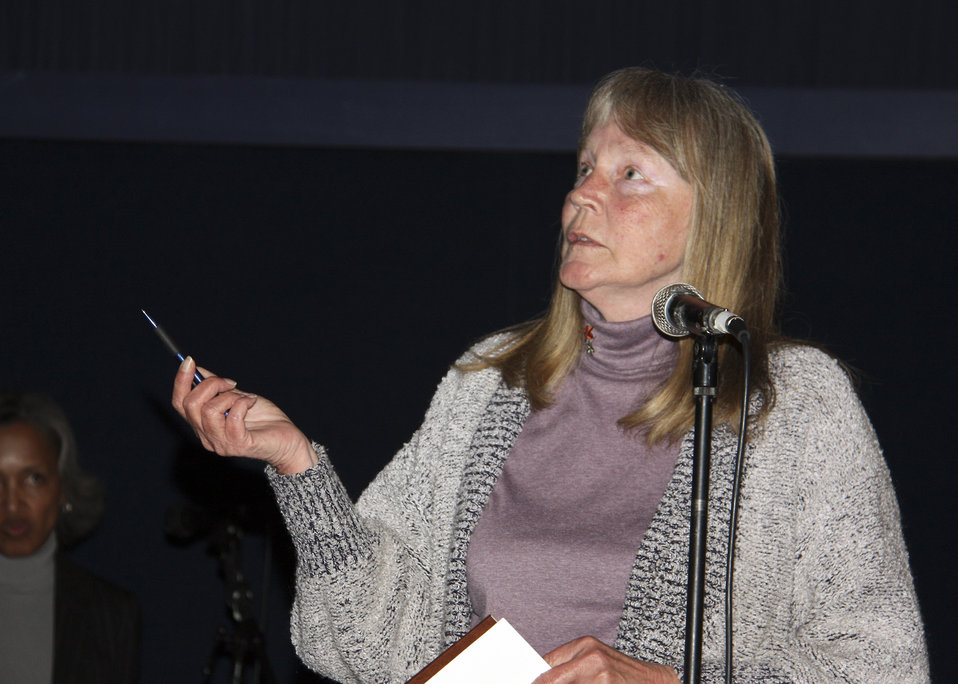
The U.S. Department of Agriculture (USDA) held the Cultural Transformation Employee listening sessions in Davis, CA, on Monday, April 12, 2010. USDA employees expressed their concerns with issues at the Department and made suggestions for correcting them and improving the image of USDA. USDA photo 10di1299-0960.